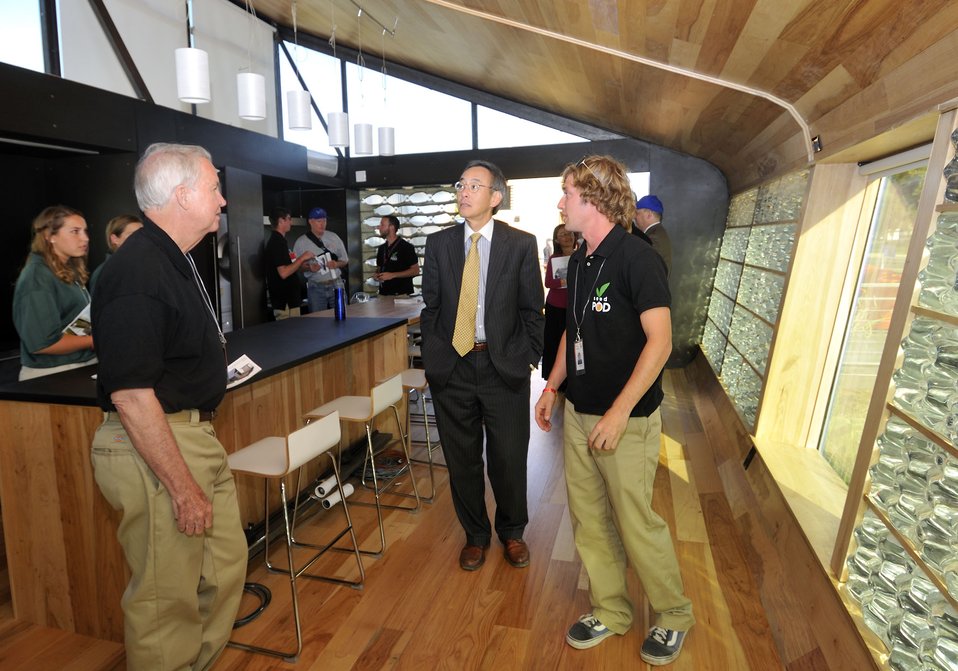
Solar Decathlon 2009 on the National Mall, with Sec. Chu

Solar Decathlon 09